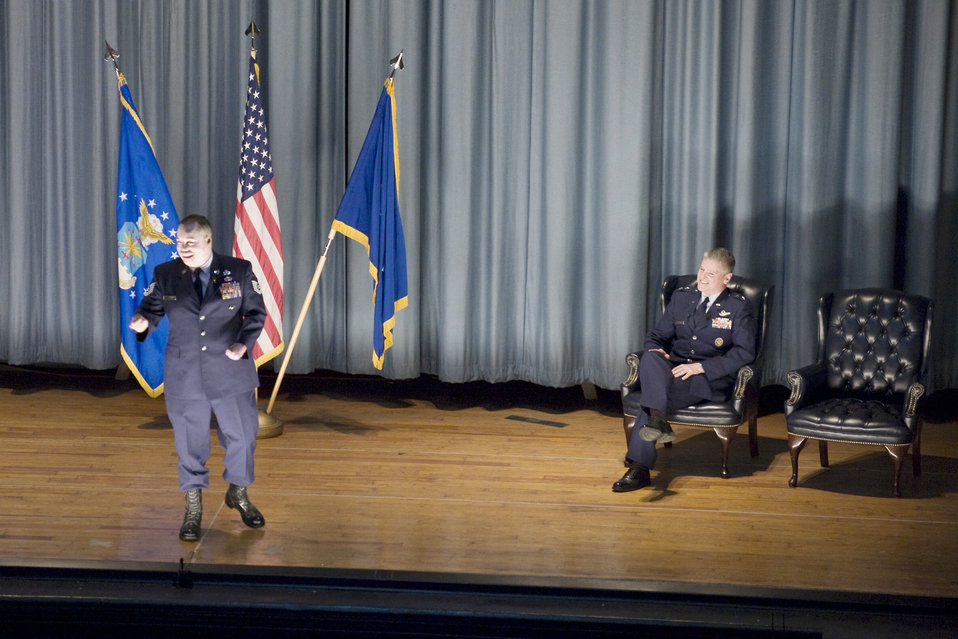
Tech. Sgt. Del Toro reenlists

Tech. Sgt. Israel Del Toro speaks to the audience Feb. 8 at the nearly packed base theater at Randolph Air Force Base, Texas, after his re-enlistment in the Air Force. Sergeant Del Toro, who suffered burns to more than 80 percent of his body after his vehicle was struck by an improvised explosive device in Afghanistan, will continue to serve as an instructor and recruiter for tactical air control party students.